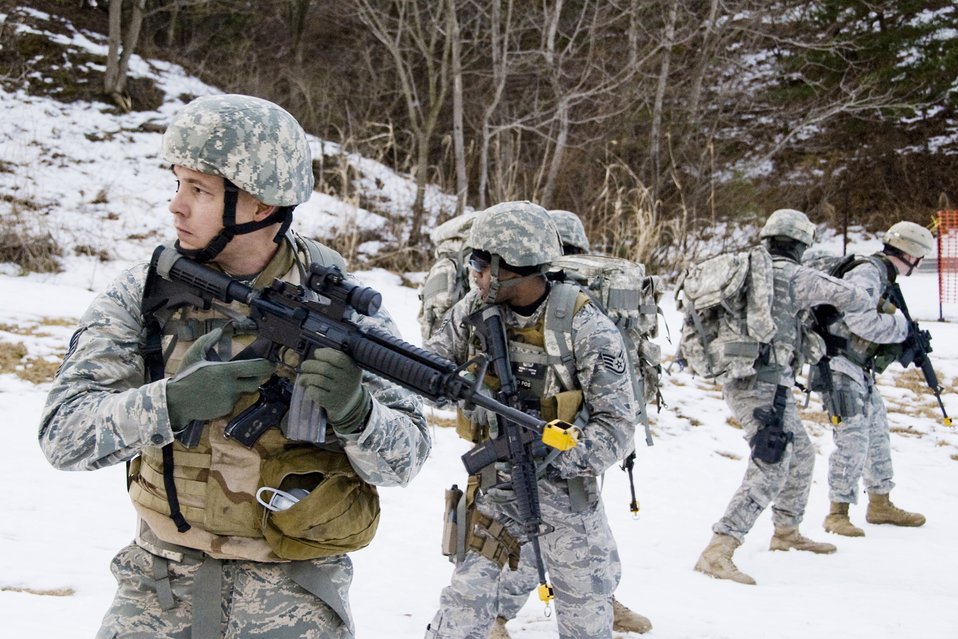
Misawa EOD unit keeps physically fit

During a tactical reload drill, Airmen of the 35th Civil Engineer Squadron Explosive Ordnance Disposal flight check for threats Jan. 8, 2010, at Misawa Air Base, Japan. The drill was part of a bi-monthly, four-mile ruck march.